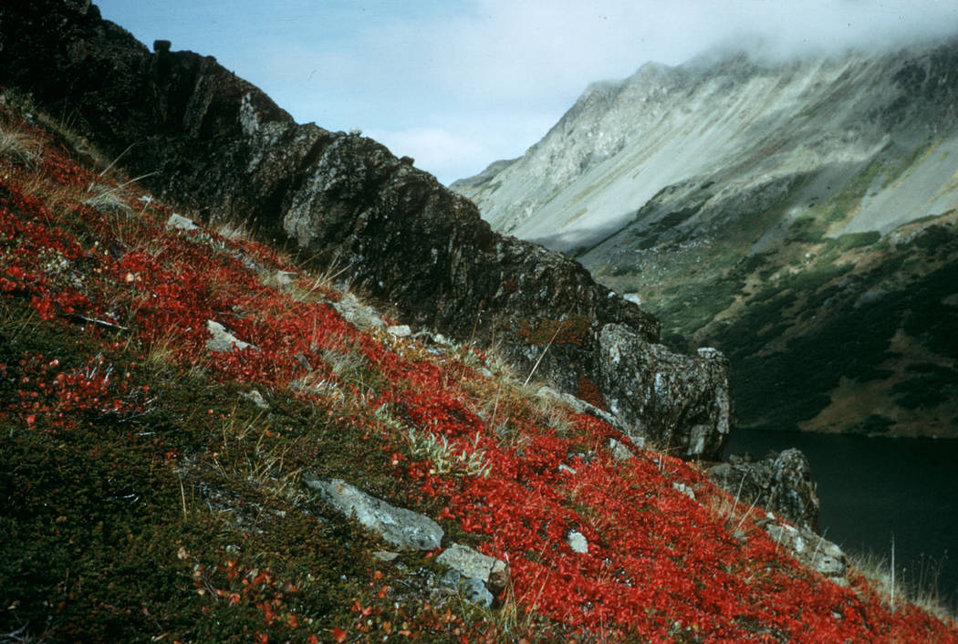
Kenai Landscape

Photo credit: USFWS/Richey

In the Kenai Peninsula, the treeline has risen, the area of wetlands has decreased, the Harding Icefield is shrinking, and available water is declining rapidly